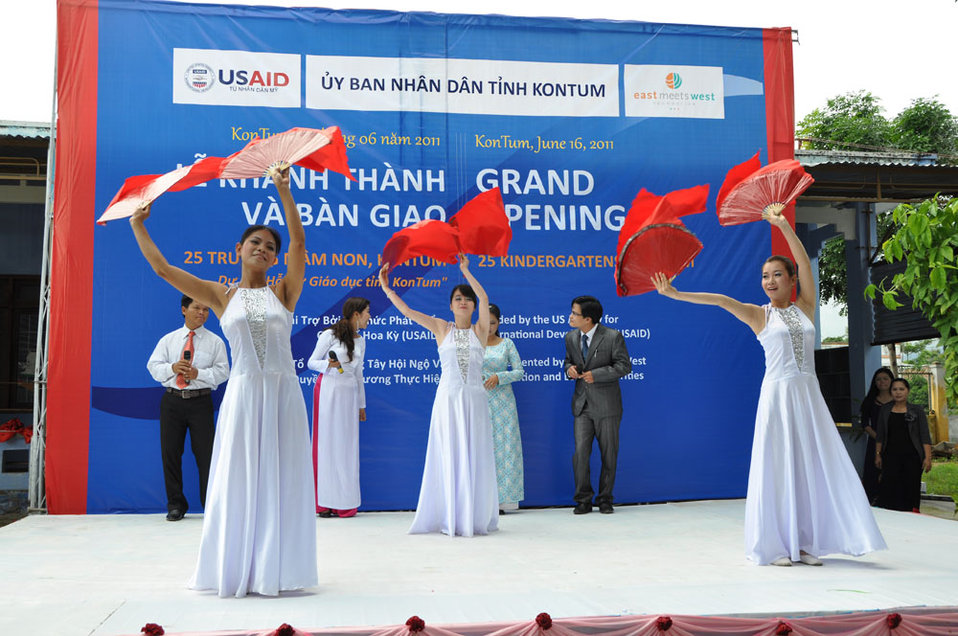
Singers and dancers perform at a kindergarten hand-over ceremony in Kon Tum.